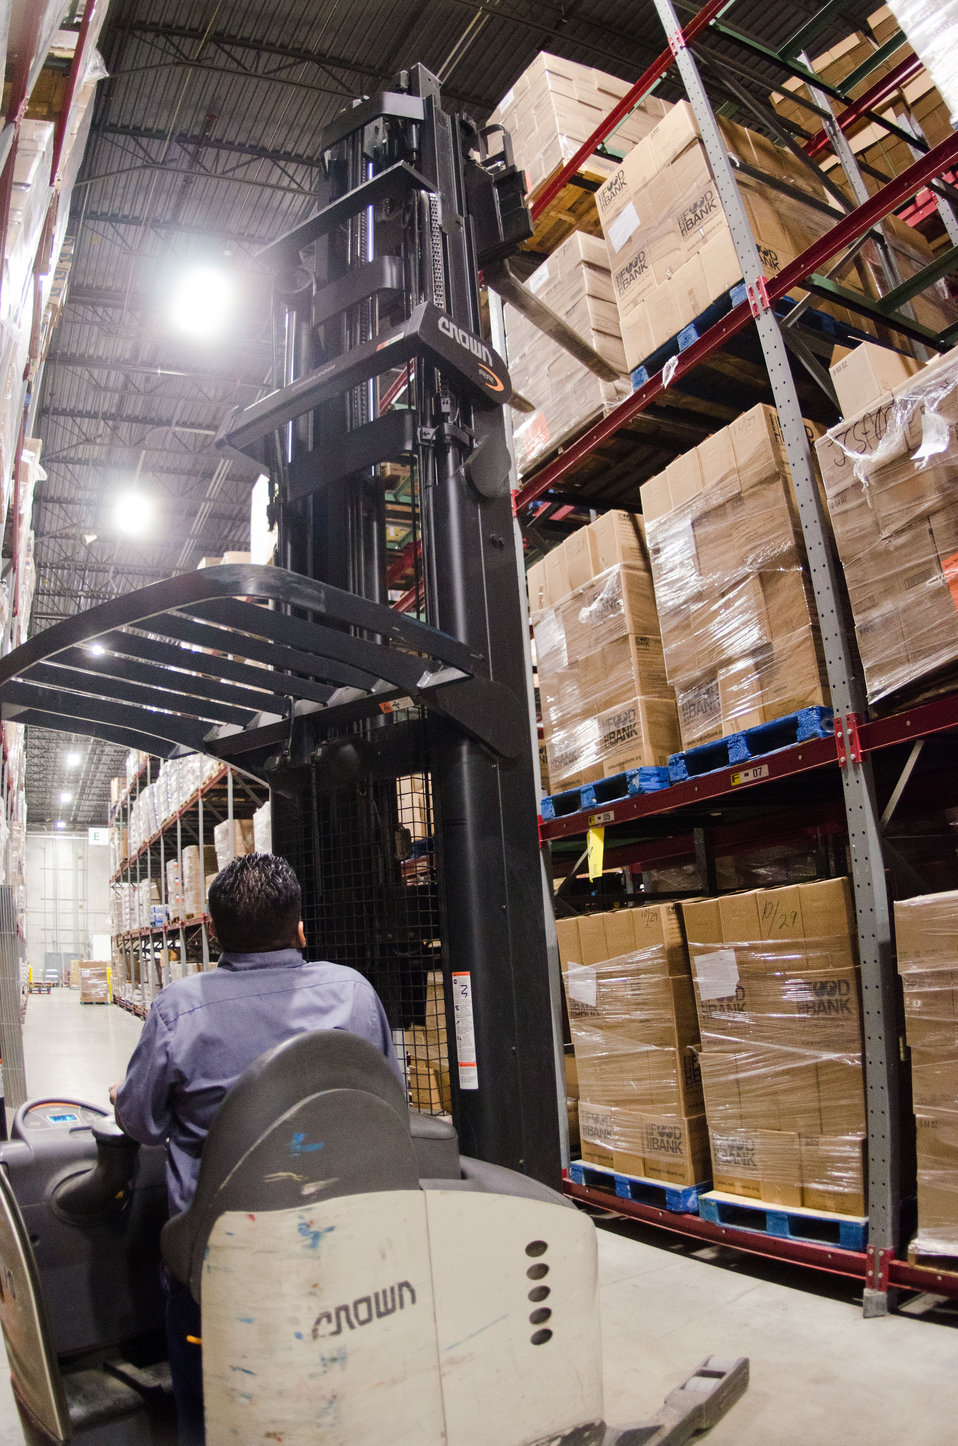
Andrew Rodriguez maneuvers a pallet of United States Department of Agriculture donated Emergency Food Assistance Program (TEFAP) commodities at the San Antonio Food Bank (SAFB) in San Antonio, TX., on Monday, October 31, 2011. SAFB is a non-profit organization that serves as a clearinghouse by receiving, storing and packaging truckloads of donated food, produce, and other grocery products, then palletizes them for fast distribution to over 500 service agencies that help people in need.
“We couldn’t do what we do without our partnership with USDA’” said President and CEO Eric Cooper. He continues, “We are privileged in partnering (with the USDA) to feeding kids, through the summer, with the Summer Food Service Program, and throughout the year, with the Child and Adult Care Feeding Program (CACFP). Then in our approach to feeding seniors, we partner with USDA in the Commodities Supplemental Food Program (CSFP), and the Senior Farmer’s Market (Nutrition) Program. And then work to bring all our (needy) parties together with our Supplemental Nutrition Assistance Program (SNAP) Outreach. You know, once families have access to food we believe it is important to educate them. Through the support of the SNAP-Education Program we are able to educate them during their time of need. With this comprehensive approach we are really able to get the right food, at the right amount, at the right time, to needy families throughout our community – which allows us to feed the fifty-eight thousand we do, each week.”
SAFB serves 16 counties in Southwest Texas and states, “Nearly one out of every four children and one out of every five adults in Southwest Texas lives in poverty and has difficulty meeting basic nutritional needs.” According to SAFB, sixty-five percent of the people requesting emergency food have children. “Additionally, the senior citizens and those living on a fixed income generally have limited funds for a consistent grocery budget.”
San Antonio is the seventh largest city in the nation with surrounding farms and ranches near its rivers and water supplies. When available they provide fresh surplus produce. Other commodities come from the food industry and manufacturers. The major food brand companies that for various reasons have surplus commodities donate it to SAFB.
Texas farmers supply fresh produce to their Fresh Produce Program.
Public donations come in the form of money, food, volunteer time, and advocacy.
Their fleet of trucks pickup and deliver food as needed.